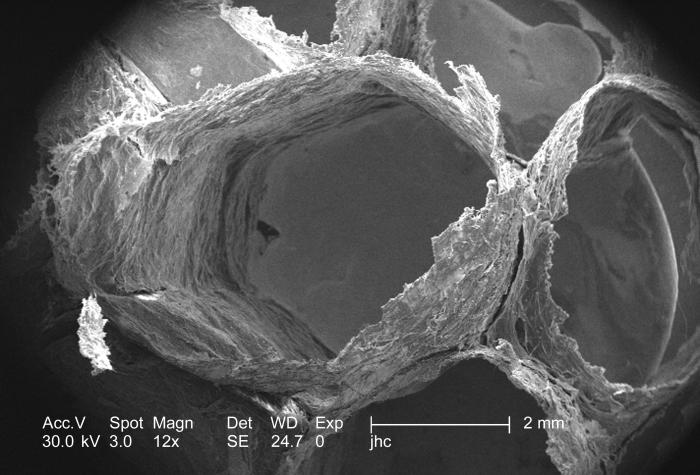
At a very low magnification of only 12x this scanning electron micrograph (SEM) depicted some of the ultrastructural details made visible of the surface of an unidentified wasps' nest found on the ground in the Decatur, Georgia suburbs. Note what appears to be a lamellated, or layered pattern, which was used by the nest builders in the construction of the hexagonally-shaped cells.